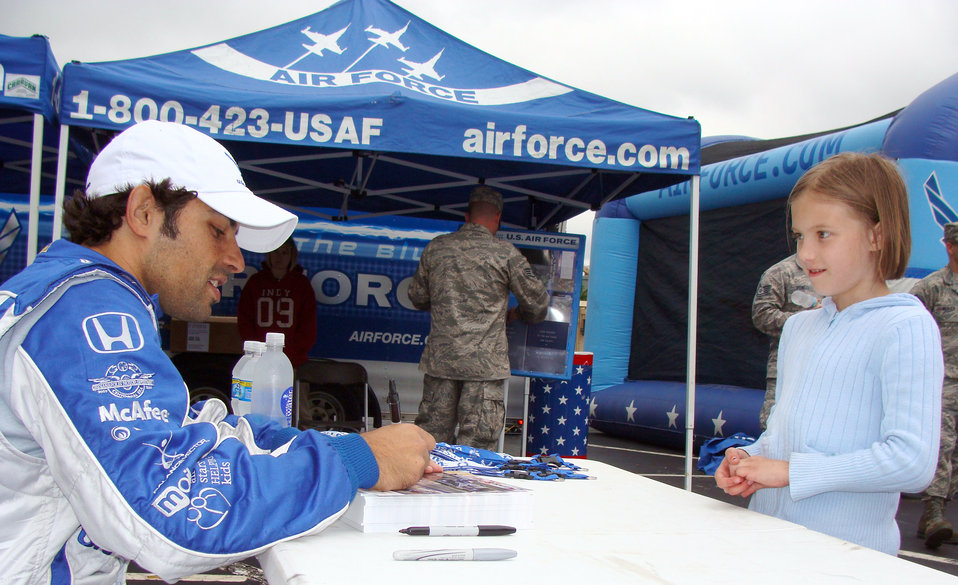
Air Force makes Indy 500 debut

Luczo Dragon Racing No. 2 car driver Rafael Matos signs an autograph for a young race fan at the Air Force display May 16 at the Indianapolis Motor Speedway. The Indianapolis 500 May 24 features the debut of an Air Force-themed Indy car driven by Matos, who qualified 12th and starts from the fourth row. The speedway recognizes the contributions of military men and women annually as each of the services display equipment and static aircraft for race fans to see during Armed Forces Day weekend.